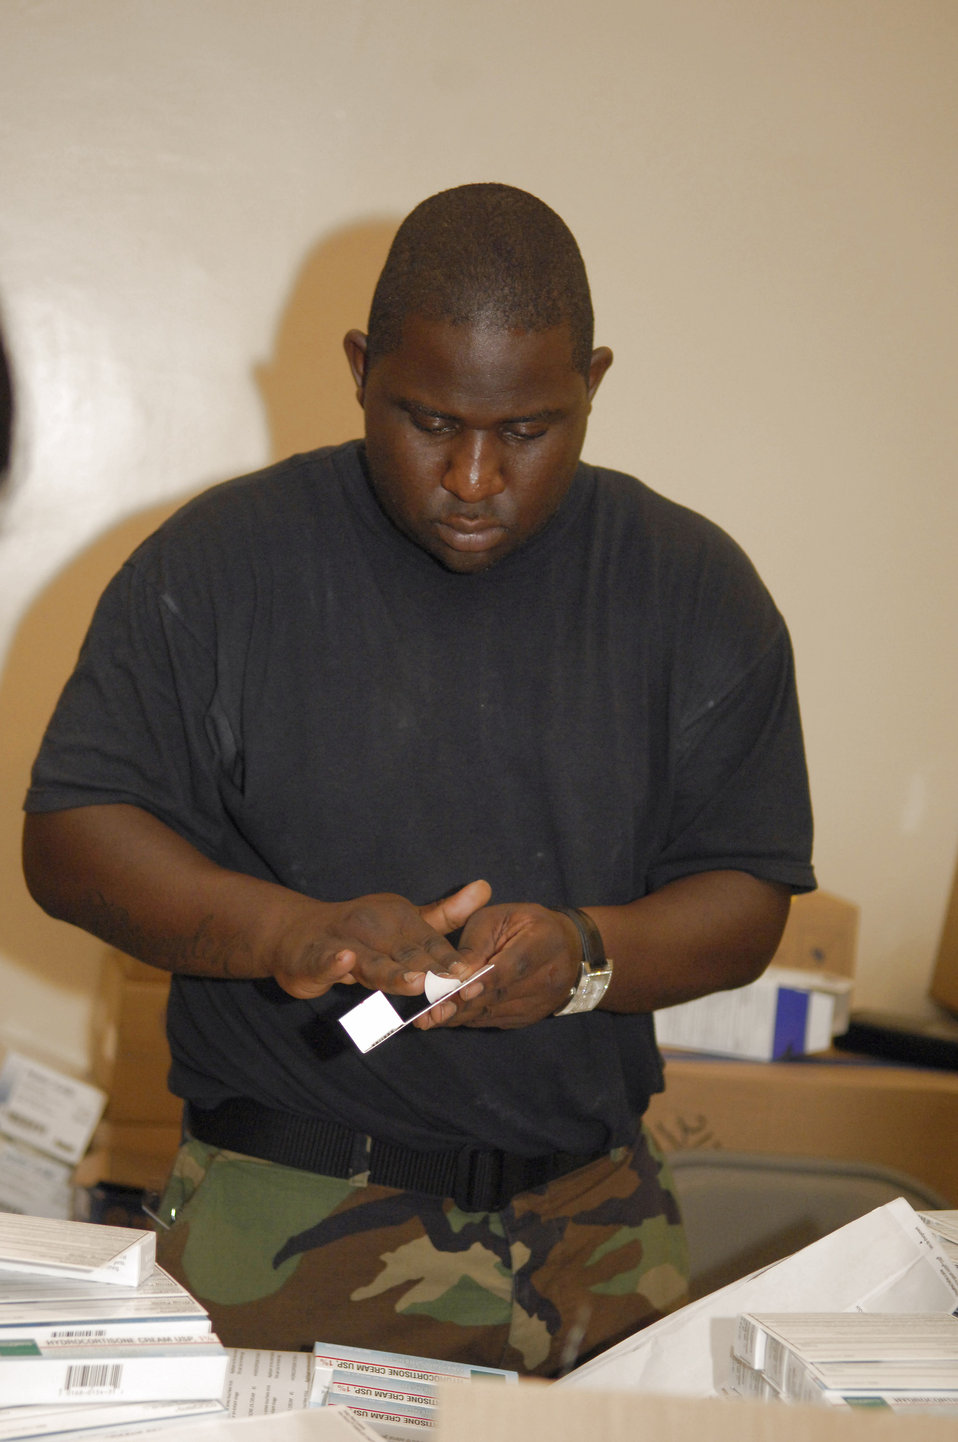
Pharmacist dispenses much-needed medicine for Malians

Staff Sgt. Brent Jnoffin labels various medicines that will be distributed to thousands of Malians during MEDFLAG 08, July 14. More than 90 servicemembers deployed to Bamako, Mali, for MEDFLAG 08, a multinational medical training exercise designed to enhance medical capabilities and readiness for U.S. and African Forces. Sergeant Jnoffin is deployed from the 31st Medical Group, Aviano Air Base, Italy.